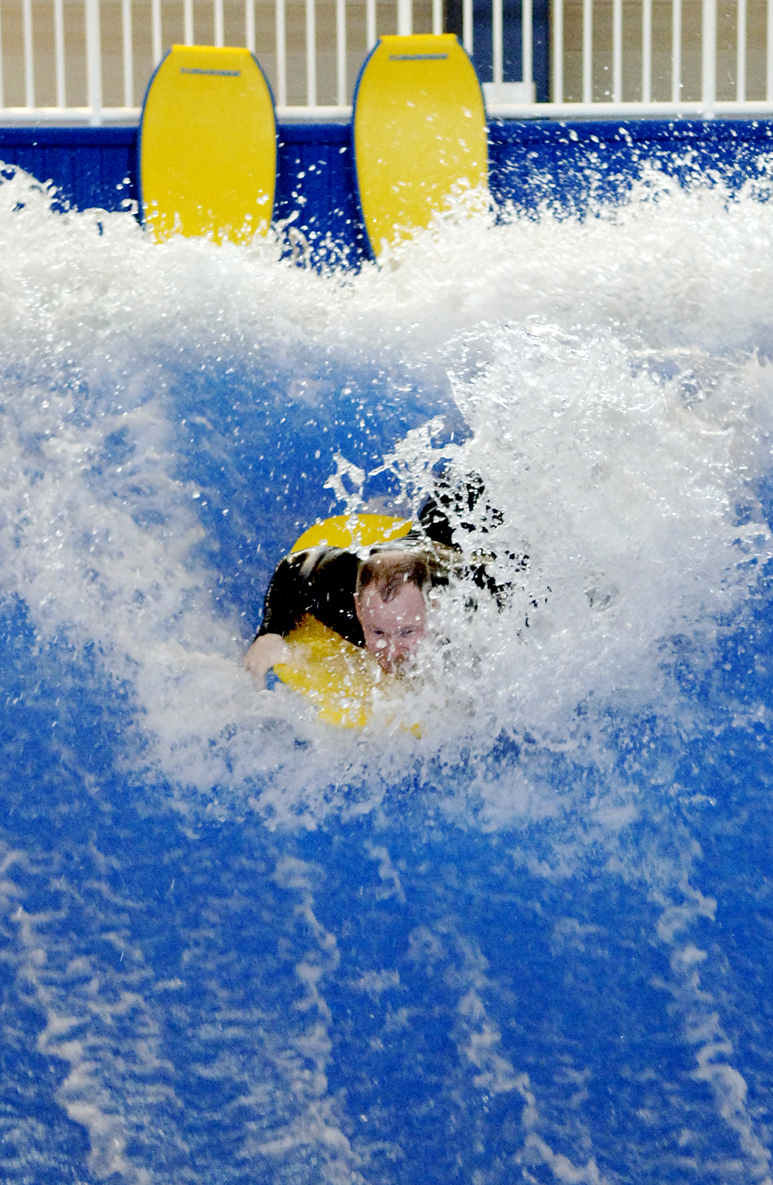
Center for Intrepid

Justin LaFerrer, an occupational therapist, demonstrates the Flowrider, a machine that creates wave action to help injured patients with balance and strengthening exercises at the Center for the Intrepid in San Antonio Jan. 29. Four floors of state-of-art equipment make the $50 million-dollar facility the only one of its kind in the world.